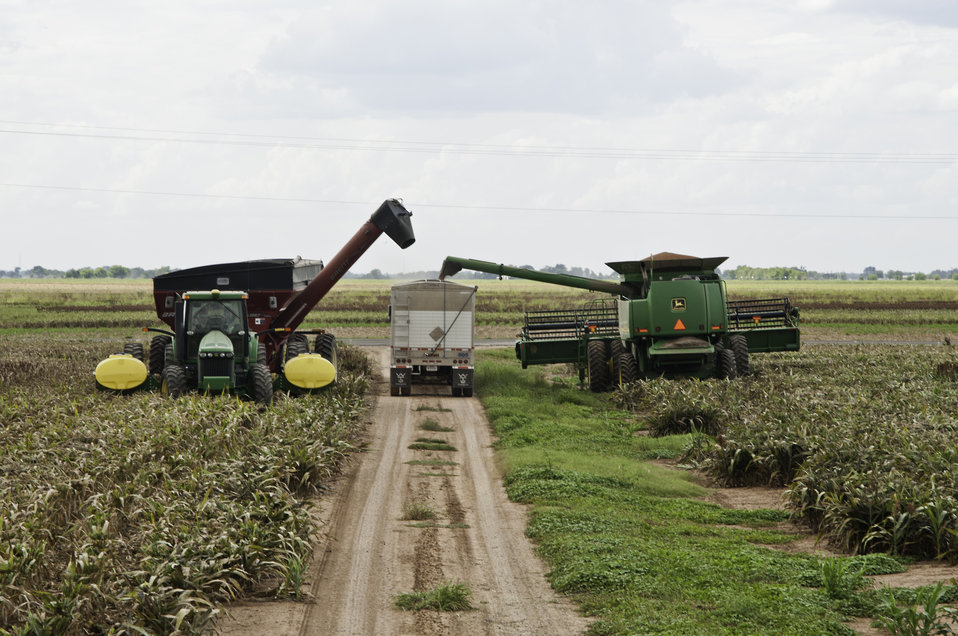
Grain sorghum is harvested on the Wilder Farms in Navasota, TX on Aug. 23, 2013.